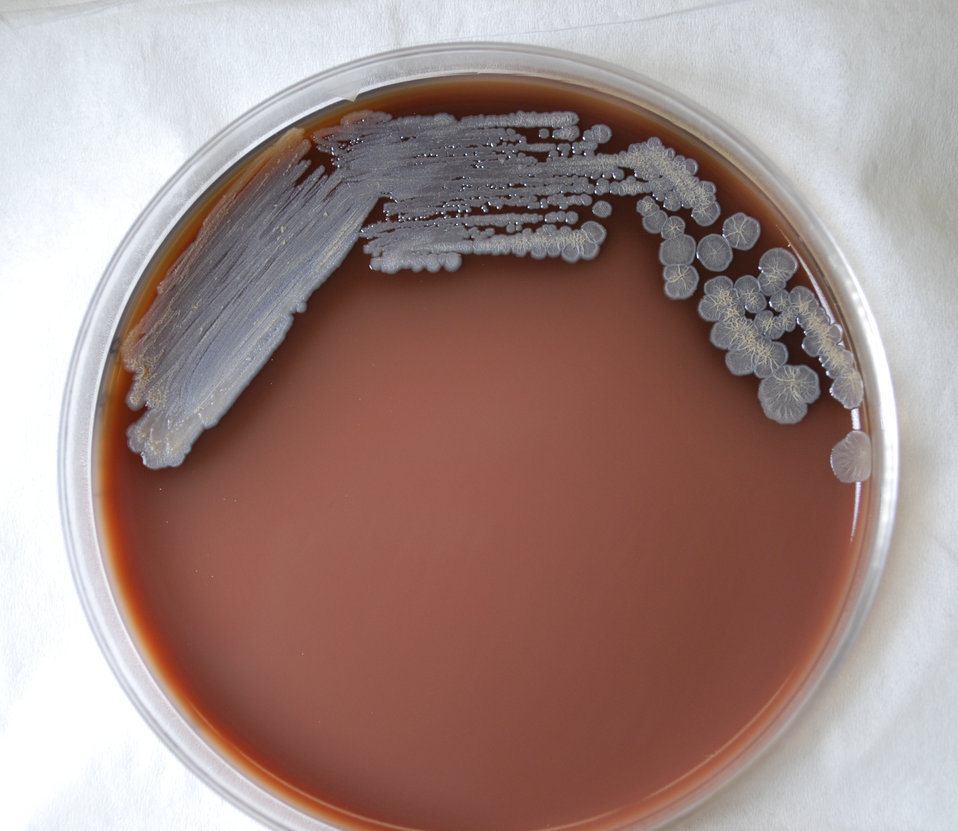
This photograph depicts the colonial morphology displayed by Gram-negative Burkholderia pseudomallei bacteria, which was grown on a medium of chocolate agar, for a 72 hour time period, at a temperature of 37�C. B. pseudomallei bacteria are the cause for the infectious disease melioidosis. For a closer view of these bacterial colonies see PHIL 12277 and 12278.